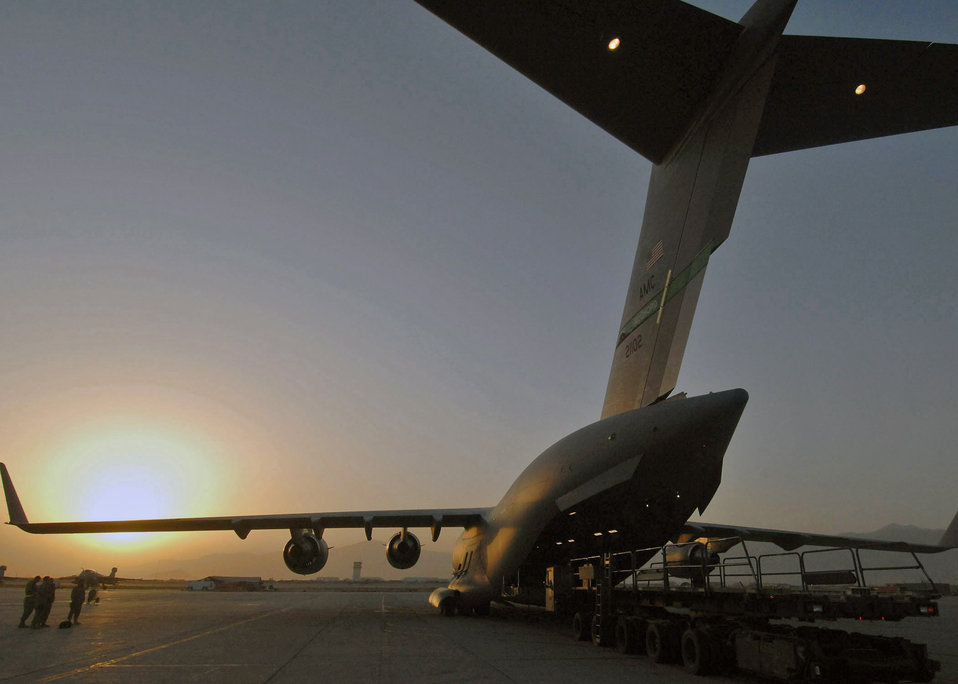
C-17s move tons of cargo

A C-17 Globemaster III prepares for airdrops in support of operations throughout Afghanistan, Iraq and the Horn of Africa. The C-17 plays a key role in the delivery of supplies and transporting troops to forward operating bases.